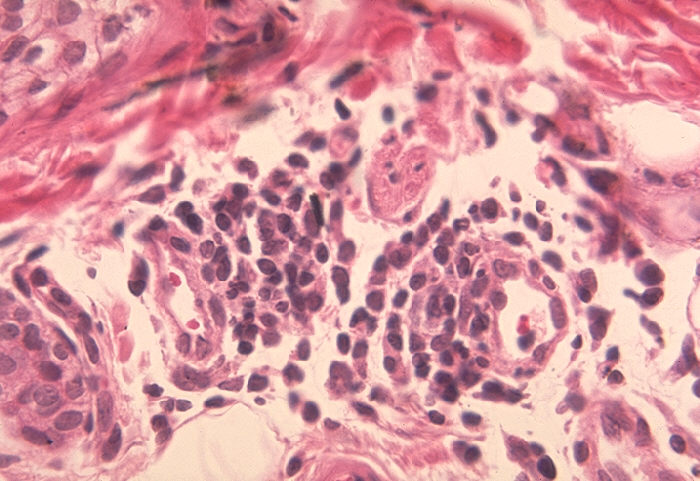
Histopathology of delayed hypersensitivity reaction to PPD in rhesus monkey with transfer factor. Skin